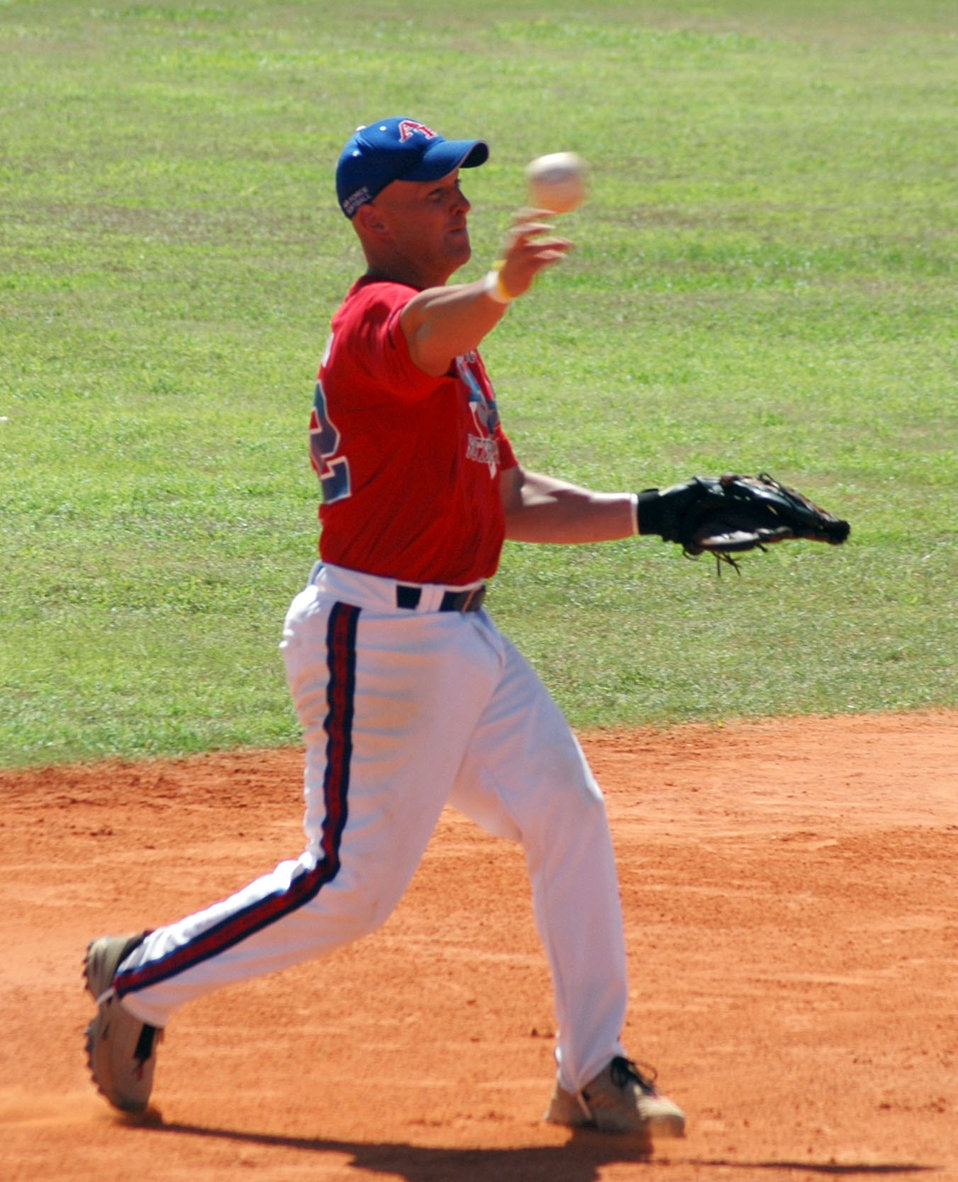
Air Force goes back-to-back, claims third title in four years

EGLIN AIR FORCE BASE, Fla. -- Third baseman Daniel Simpson throws out an Army runner in their second matchup of the 2005 Armed Forces Men's Softball Championships held here Sept. 7 to 9. Air Force defeated Army 12-5.